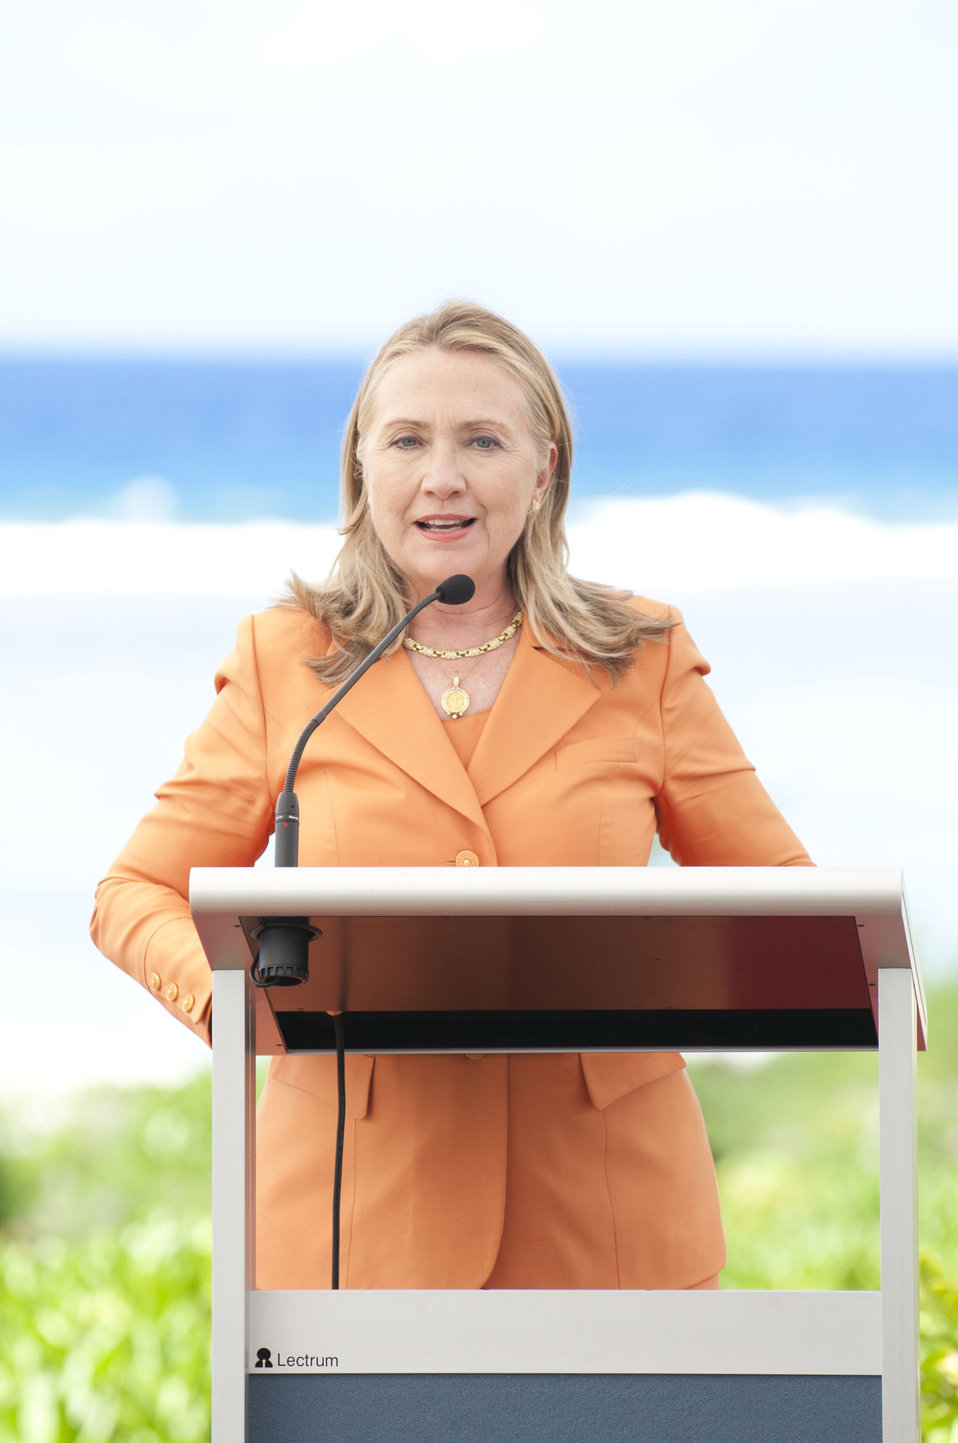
Secretary Clinton Delivers Remarks on Peace and Security Partnerships in the Pacific

U.S. Secretary of State Hillary Rodham Clinton delivers remarks commemorating U.S. peace and security partnerships in the Pacific at Tamarind House in Rarotonga, Cook Islands, August 31, 2012.